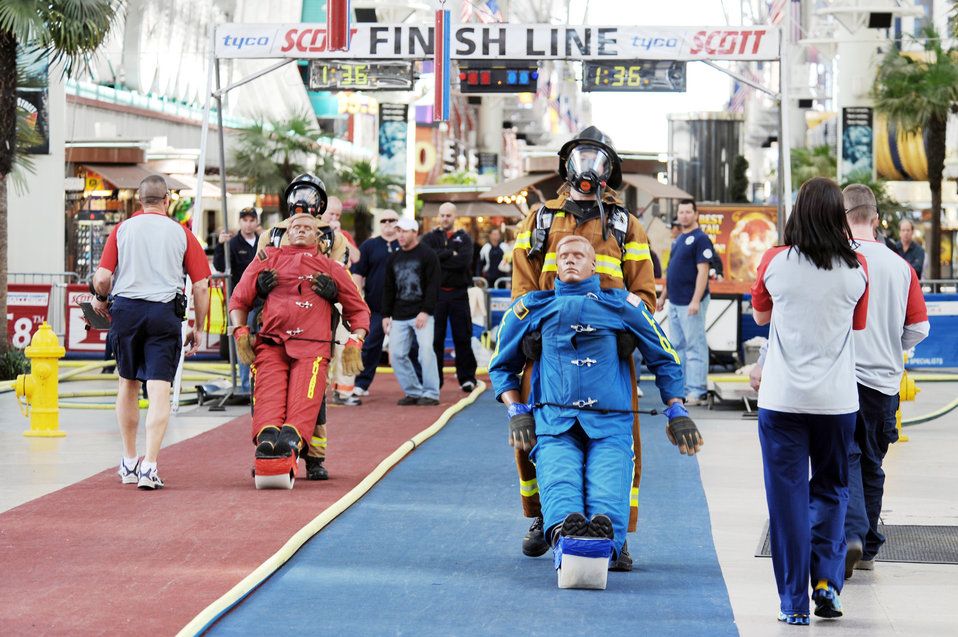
Airmen compete in 2009 Scott Firefighter Combat Challenge

Firefighters from all around the world compete in an individual firefighter event Nov. 17, 2009, at the 2009 Scott Firefighter Combat Challenge in Las Vegas.